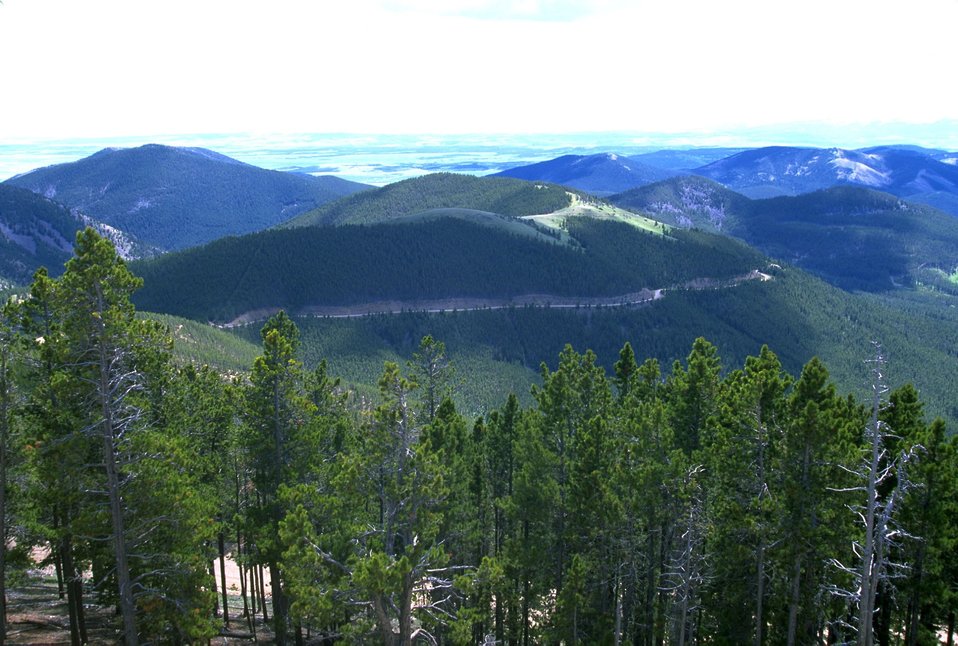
View of a mountain road in the Judith Mountains